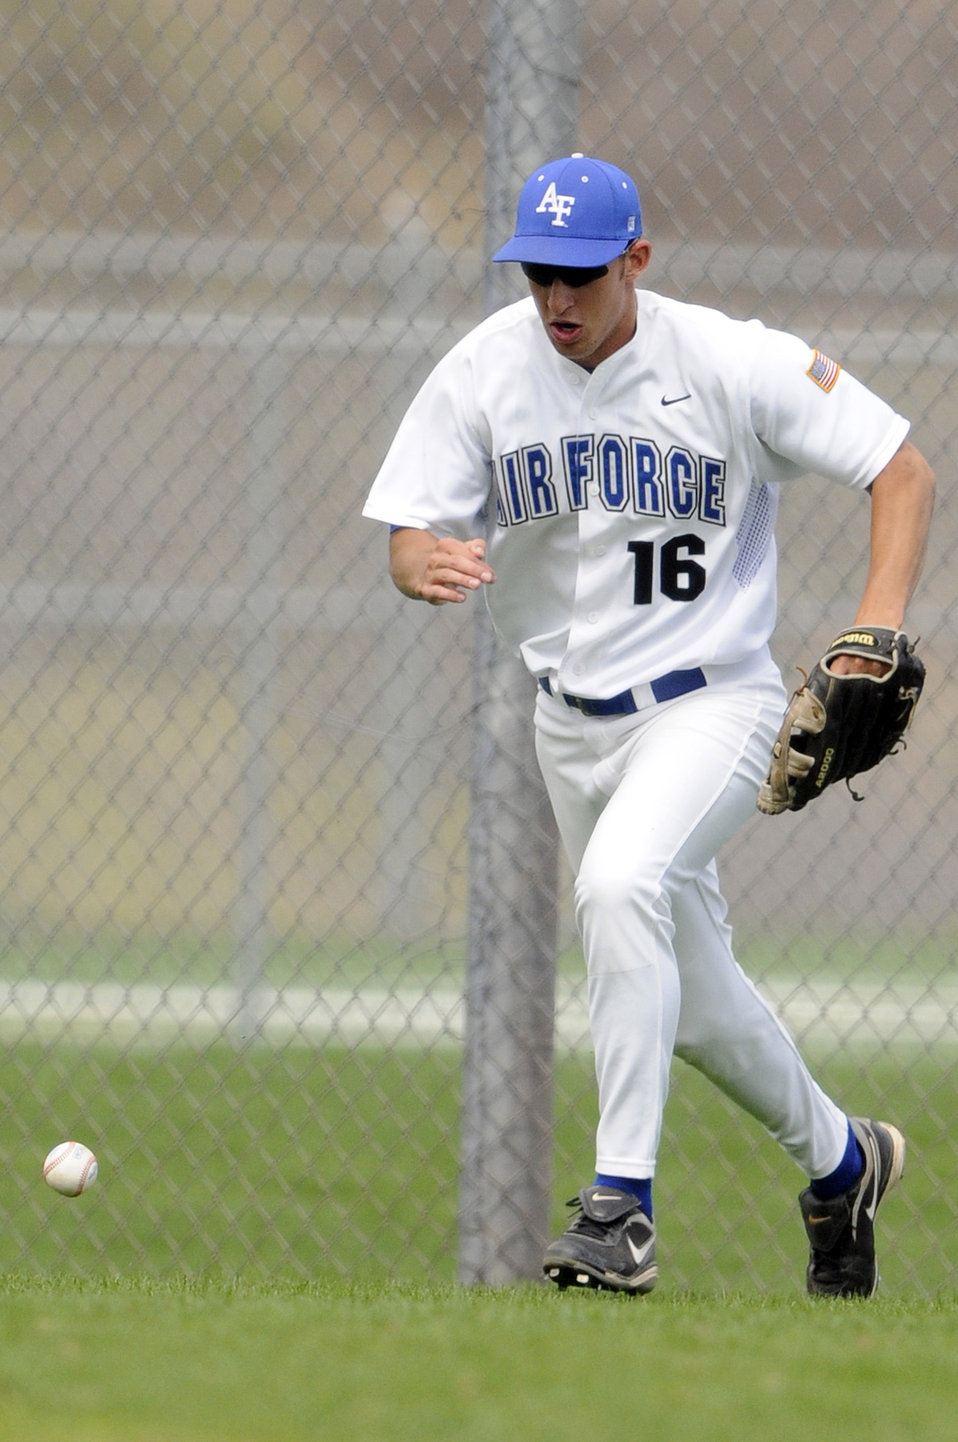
Baseball season ender

Air Force Academy sophomore right fielder Tytus Moss chases down a line-drive single during a two-game series with the University of New Mexico Lobos May 15 at Falcon Field in Colorado. The Air Force Academy finished the season with a 14-37 overall record.